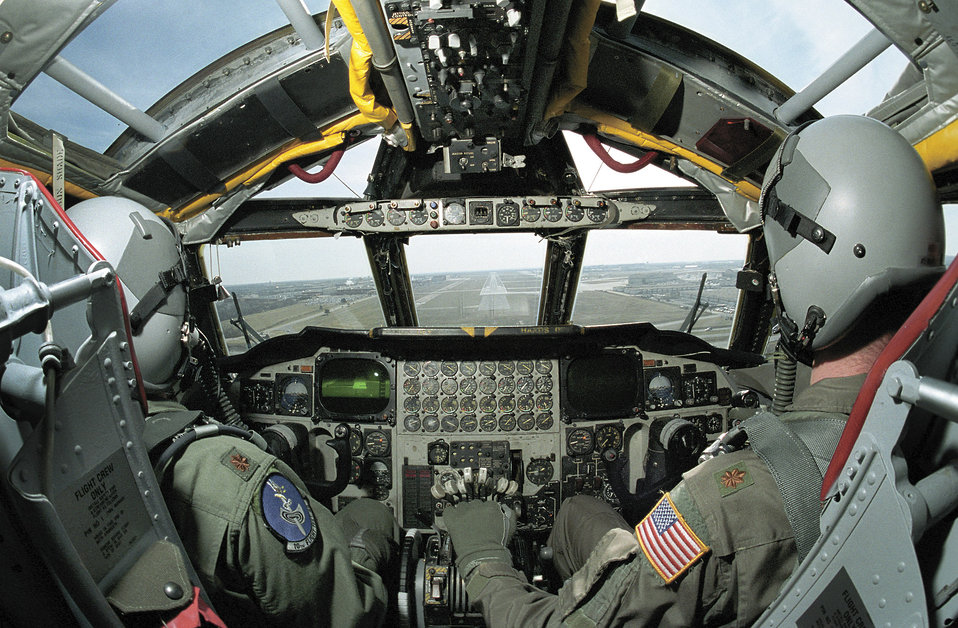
10Flight Test Squadron

Maj. Tim Hines (left) and Maj. Cary Montgomery, 10th Flight Test Squadron pilots, bring a B-52 Stratofortress to Tinker Air Force Base, Okla., for depot maintenance. The crew will then fly the aircraft back to its home station after any work is done.